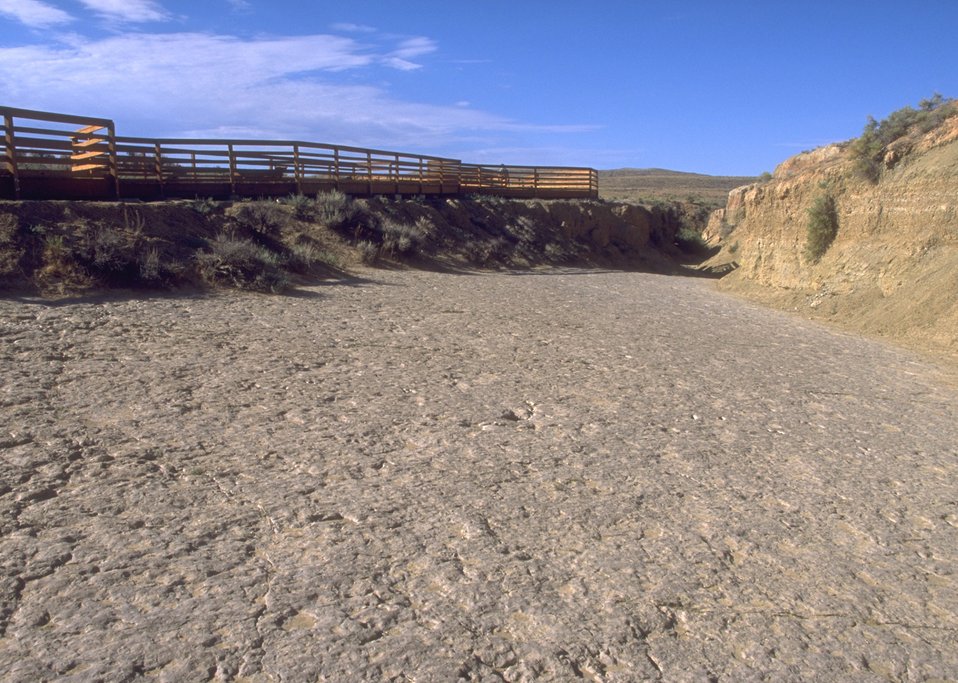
View of tracksite at Red Gulch Dinosaur Tracksite along Red Gulch/Alkali Back Country Byway, Worland.